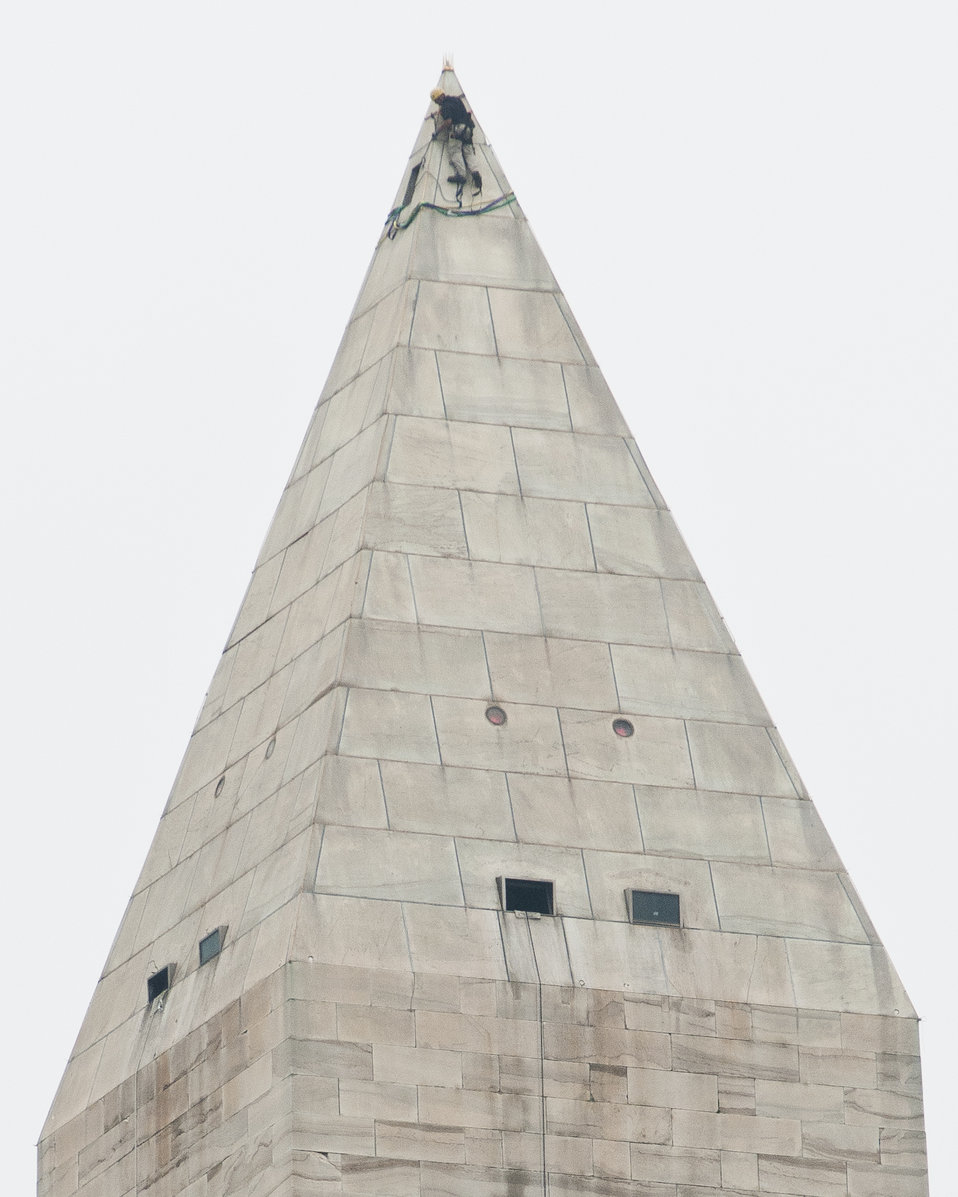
View from the U.S. Department of Agriculture Whitten Building of Dave Megerle, completing a day of rigging setup on the tip of the Washington Monument on Tuesday September 27, 2011. The rigging will be used by a four-person that will rappel down the four sides of the monument and help document damage from the August 23, 2011 5.8-magnitude earthquake and following storm weather. They will also fill cracks with sealant to help protect it from water and ice damage until repairs can be completed.